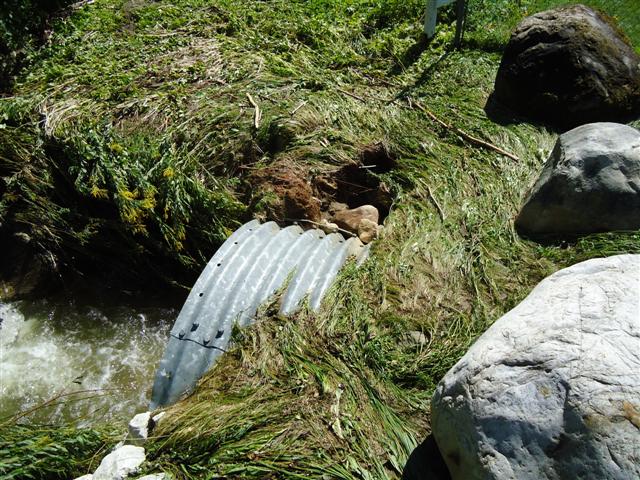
Storm damage at Eisenhower National Fish Hatchery in Vermont

Main Road culvert.